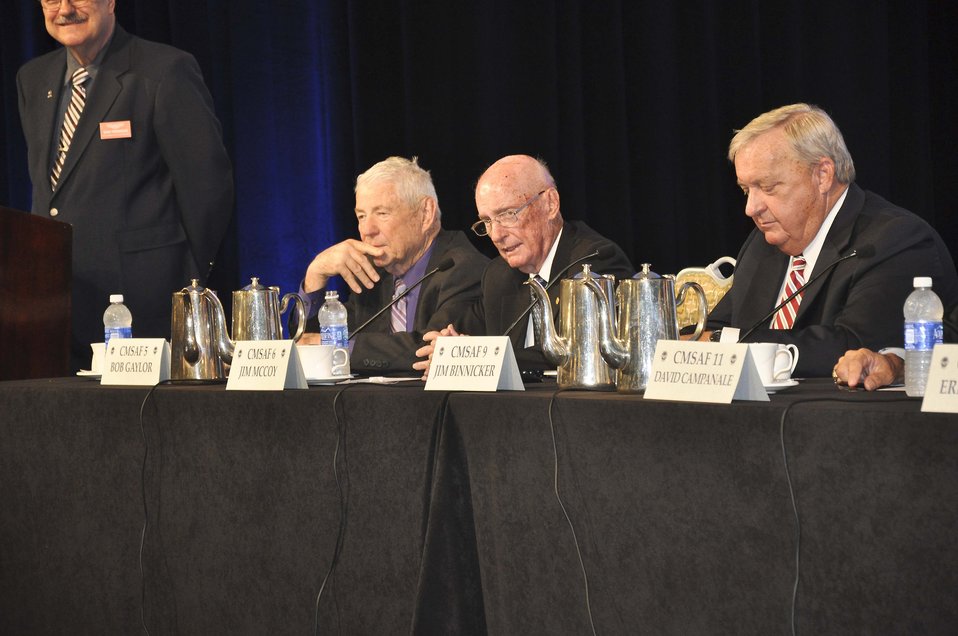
Former CMSAF forum

Former chief master sergeants of the Air Force are introduced during the Air Force Sergeants Association Convention and Professional Airmen's Conference in Jacksonville, Fla., Aug. 15, 2012. The former chiefs spoke to Airmen about challenges they each faced during their tenures as the service’s highest ranking enlisted Airman.